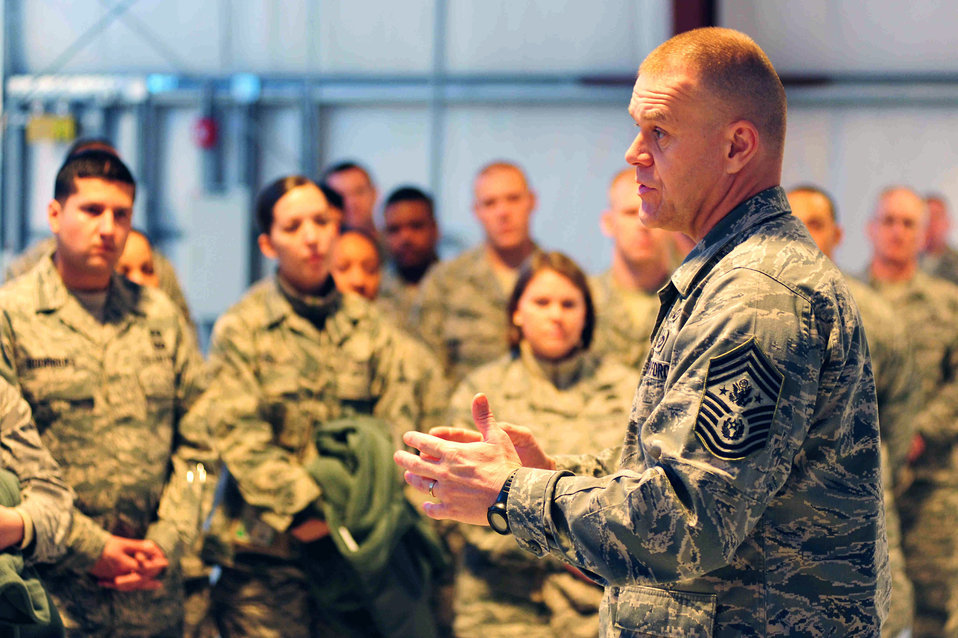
Air Force Chief of Staff Gen. Norton Schwartz speaks to AirmenChief Master Sgt. of the Air Force James A. Roy speaks at an Airman's Call

Chief Master Sgt. of the Air Force James A. Roy speaks at an Airman's Call Nov. 27, 2009, at the Transit Center at Manas, Kyrgyzstan.